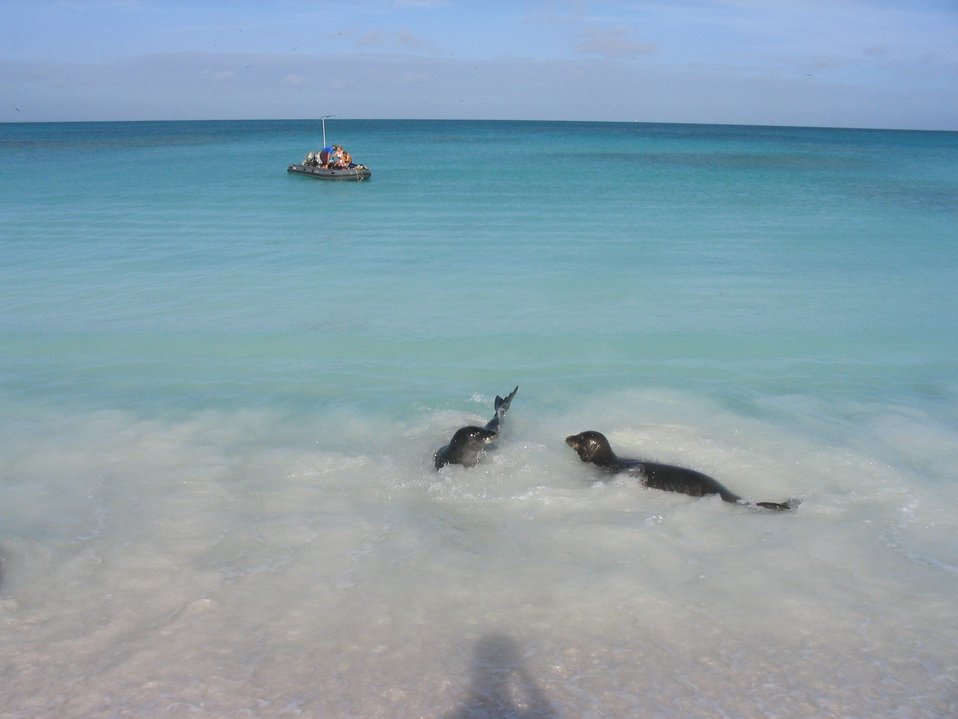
Hawaiian monk seal - Monachus schauinslandi . This species is Hawaii's only member of the pinniped family.